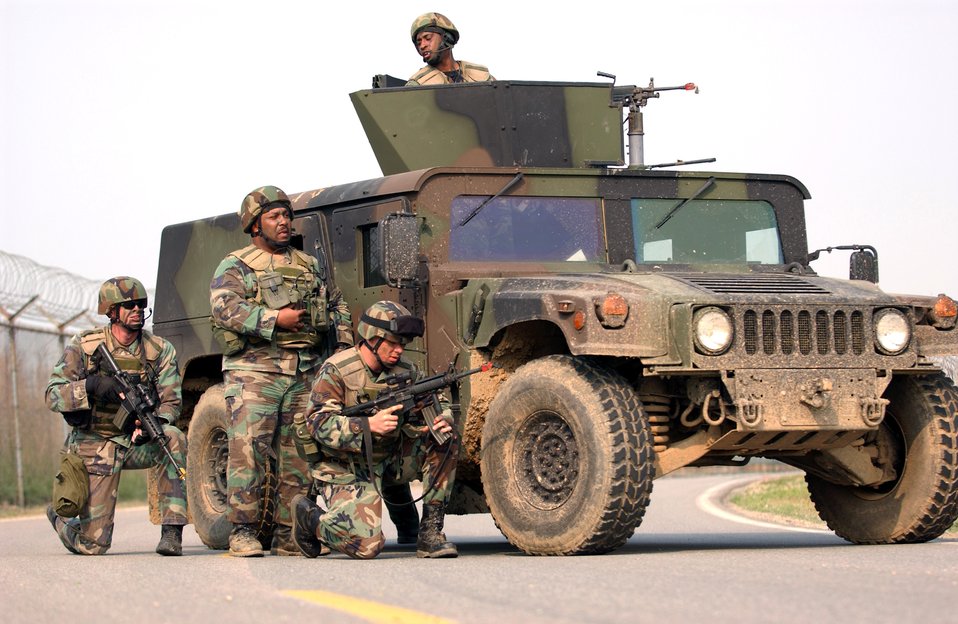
Commando Warrior prepares Airmen for war on terrorism

Airmen learn convoy procedures during a Commando Warrior class at Osan Air Base, South Korea. Commando Warrior trains Airmen throughout the Pacific Air Forces area for deployments supporting the war on terrorism.